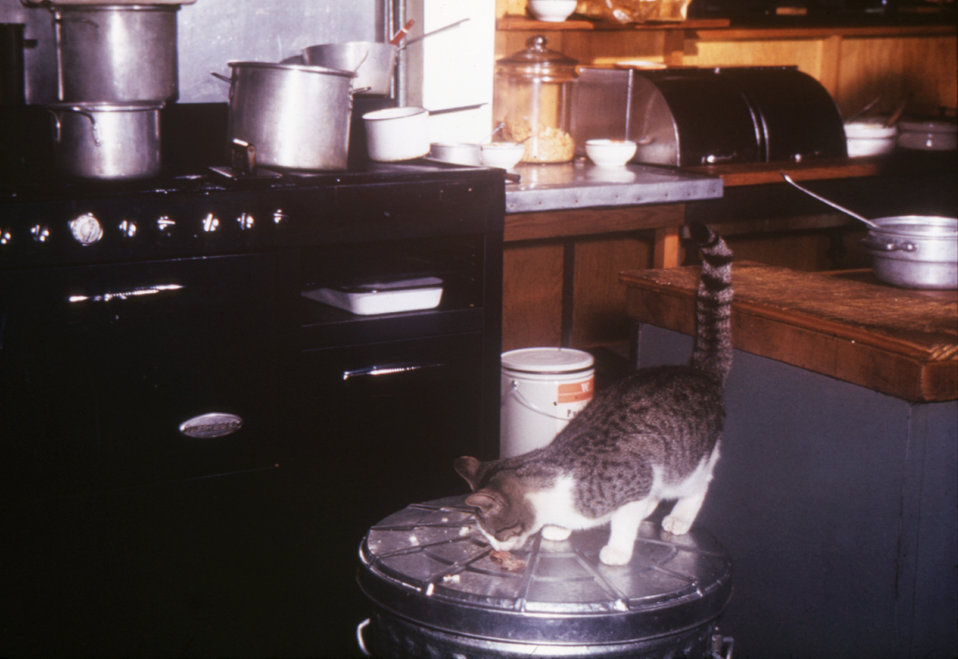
This cat was found in the kitchen of a migrant worker camp during inspection of the food preparation area's sanitary conditions.